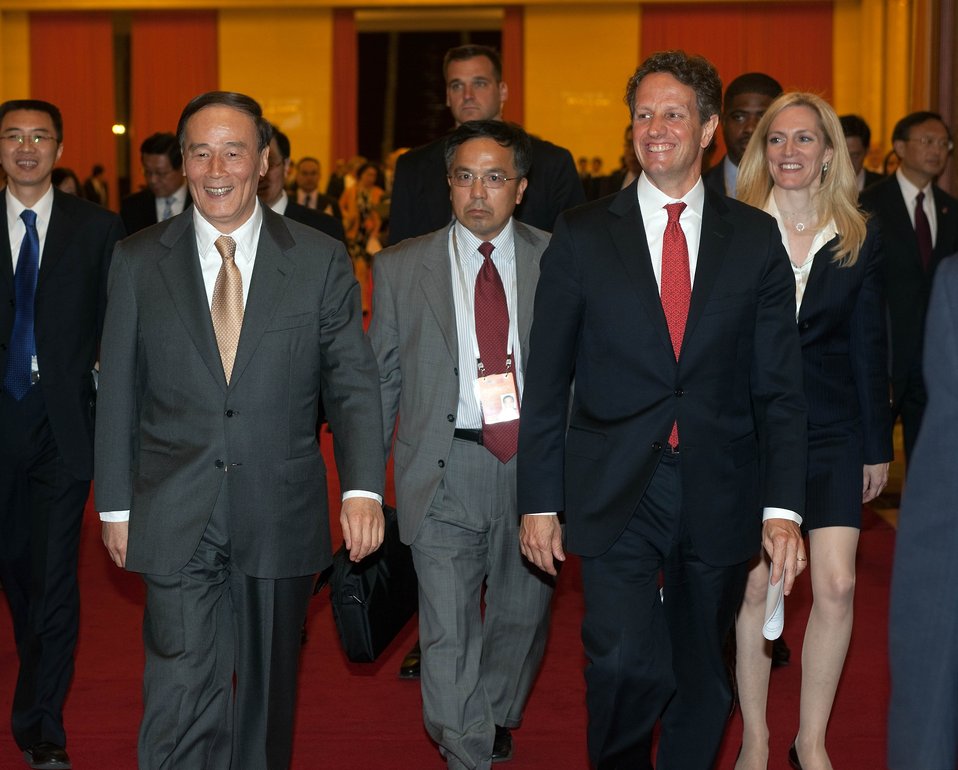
SandED 5/25/10

Secretary Geithner and Vice Premier Wang Qishan after the U.S.-China S&ED closing statements.